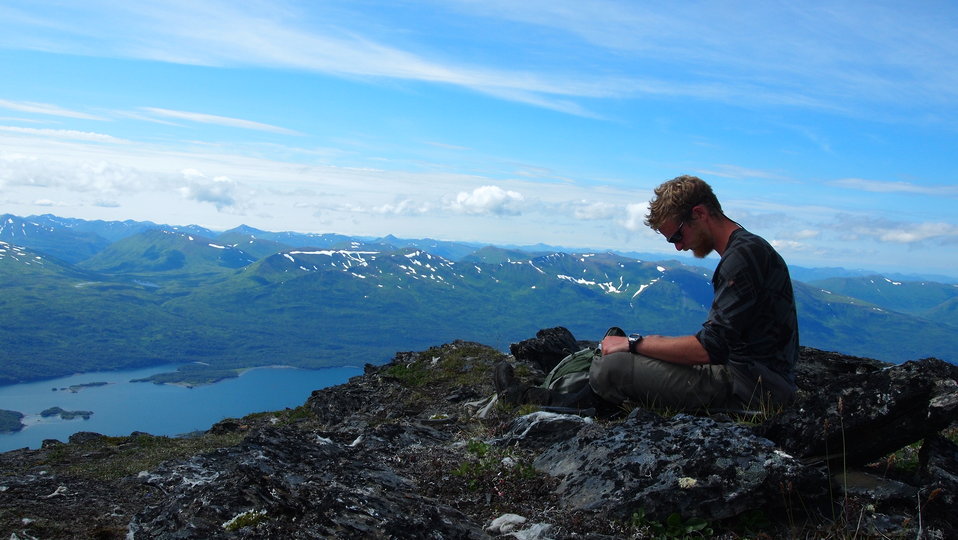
2012 Mt. goat research volunteer

Photo Credit: USFWS
Source: Kodiak NWR